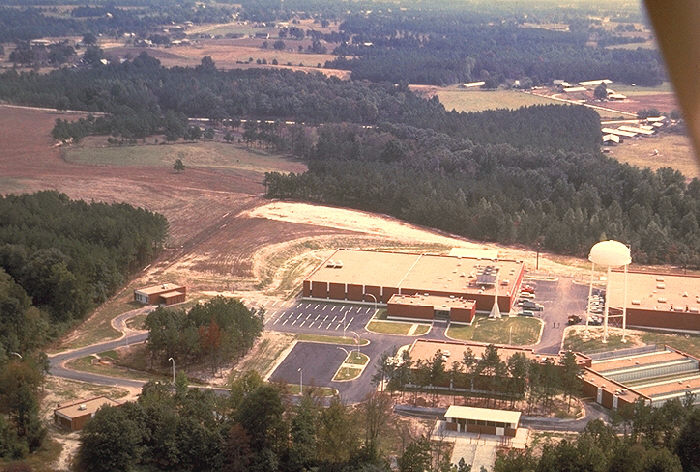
This was an aerial view of the Centers for Disease Control and Prevention (CDC) Lawrenceville, Georgia buildings.